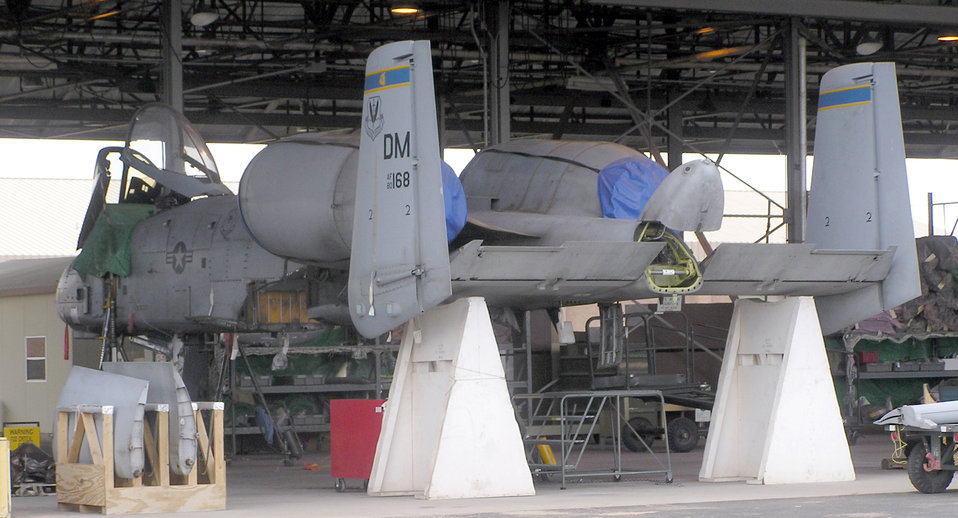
Thunderbolt upgrades

DAVIS-MONTHAN AIR FORCE BASE, Ariz. -- An A-10 Thunderbolt II with wings and landing gear removed sits on custom-made stands in Aerospace Maintenance and Regeneration Center's aircraft maintenance shelter. It is undergoing service-life extension work to double its operational lifespan.